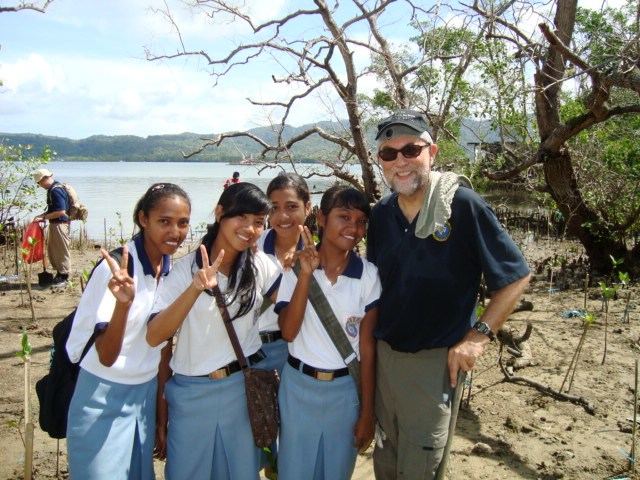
FSLO Weinz and Indonesian High School Students Plant Mangrove Trees

Foreign Service Liaison Officer (FSLO) Tom Weinz and Indonesian high school students plant mangrove trees along the beach near Ambon City, Ambon Island, Eastern Indonesia, during a community service project on July 29, 2010. Mangroves prevent erosion and provide excellent habitat for all types of sea life, greatly enhancing the local fish population. Pacific Partnership 2010 is in Ambon as part of its humanitarian and disaster relief exercise with the Indonesian military and ships from Australia and Singapore.